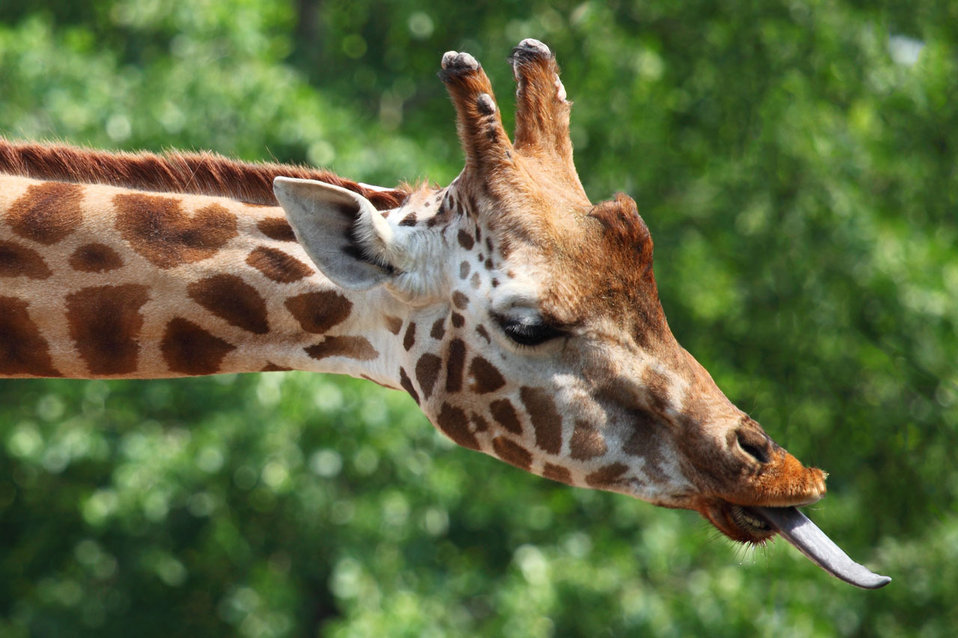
Giraffe's tongue

Giraffe sticking out tongue.